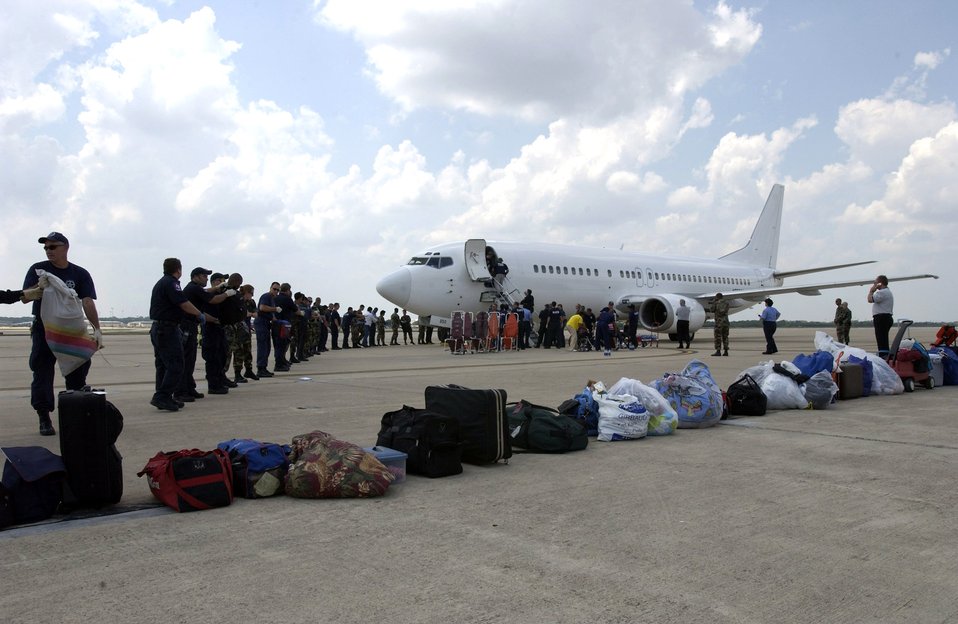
Aeromedical evacuation hub established at Lackland

LACKLAND AIR FORCE BASE, Texas -- Volunteers help Hurricane Katrina evacuees get off a Boeing 737 aircraft here. The evacuees arrived Sept. 2 from New Orleans. They are being inprocessed, given a medical checkup, fed and put into temporary shelters.